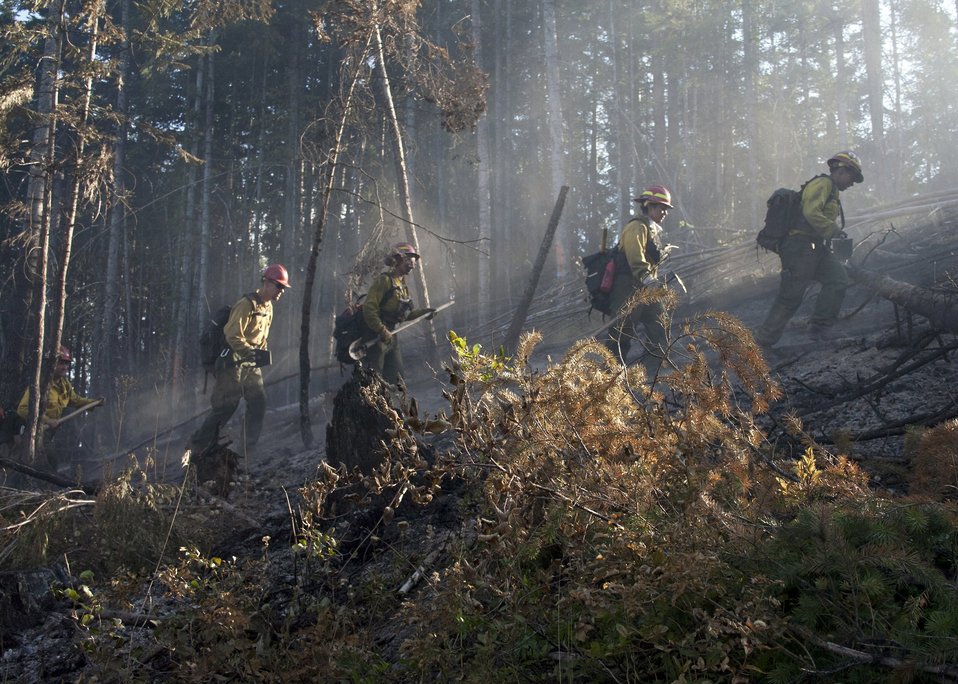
Firefighters supported by three fire engines, two helicopters, two water tenders, a dozer and an air tanker battled to contain the 90 acre Rogers Fire located on Mt. Rogers five miles west of Aladdin, WA on the Colville National Forest. Firefighters worked under adverse conditions with steep terrain and gusting winds to reduce the loss of timber and protect the Rogers Mountain Trail. The Rogers Fire began on Aug. 9, 2011 and was controlled by Aug. 19, 2011 with mop up crews ensuring that no flare-ups occurred. Colville National Forest has 1.1 million acres in northeastern Washington and includes the Kettle River, Selkirk Mountain ranges, and the upper reaches of the Columbia River.